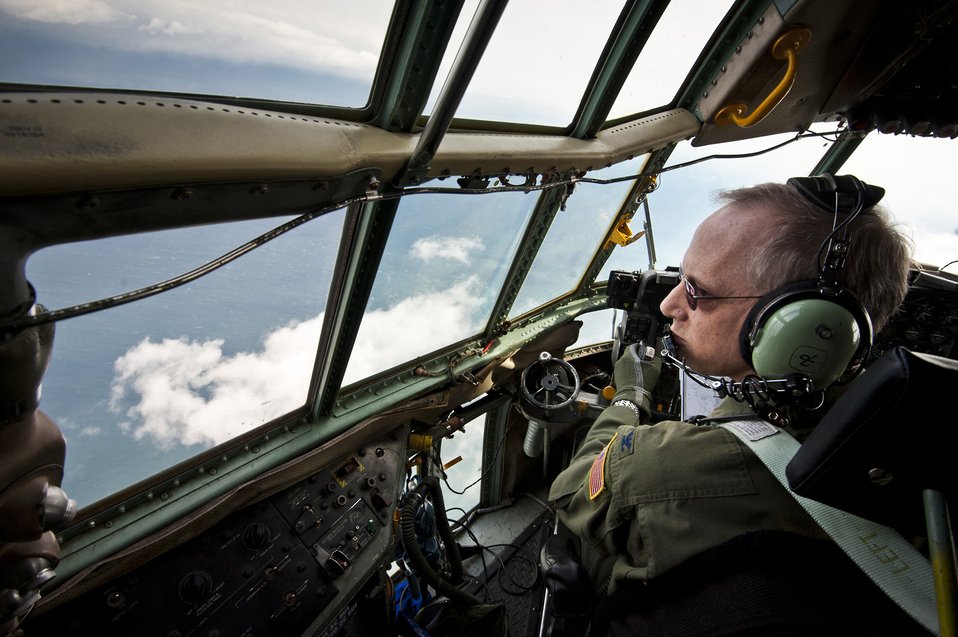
Almost there

Col. Otto Feather looks out the window of a C-130 Hercules during landing preparations March 26, 2011, at Sendai Airport, Japan. Feather is the 374th Airlift Wing commander at Yokota Air Base, Japan.